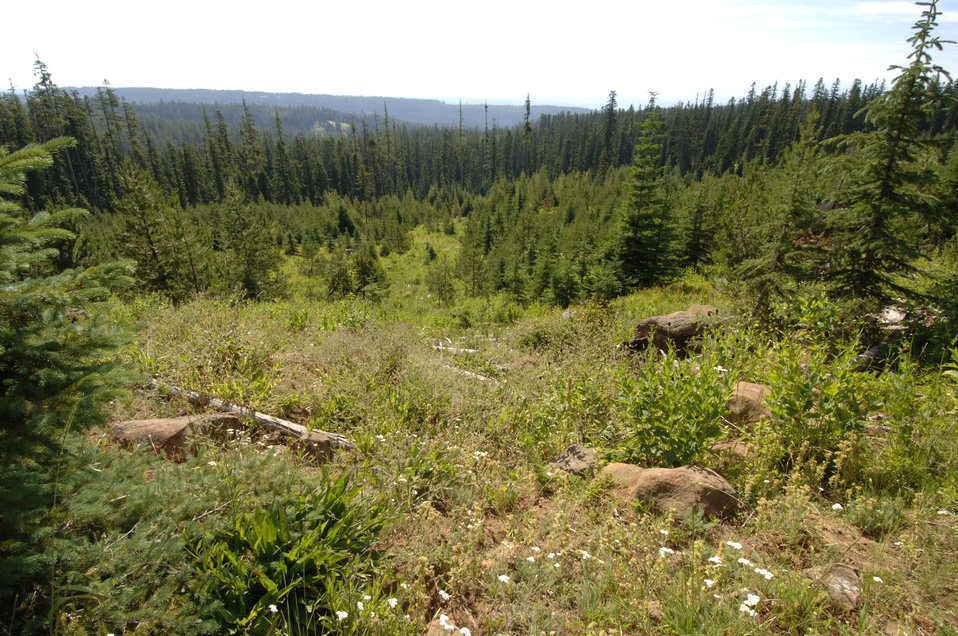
The U.S. Department of Agriculture (USDA) Forest Service (FS) is strongly committed to the management of the National Forests in an environmentally sound manner. The agency's top priority is to maintain and improve the health, diversity, and productivity of forest ecosystems for the enjoyment of current and future generations. Forest management includes guidance, administration, and support of the agency's forest products management and sales programs. Forest products include materials derived from a forest for commercial use such as lumber and paper, and also 'special forest products' such as medicinal herbs, fungi, edible fruits and nuts, and other natural products. This photo was taken at the Umatilla National Forest in Oregon on July 10, 2007.